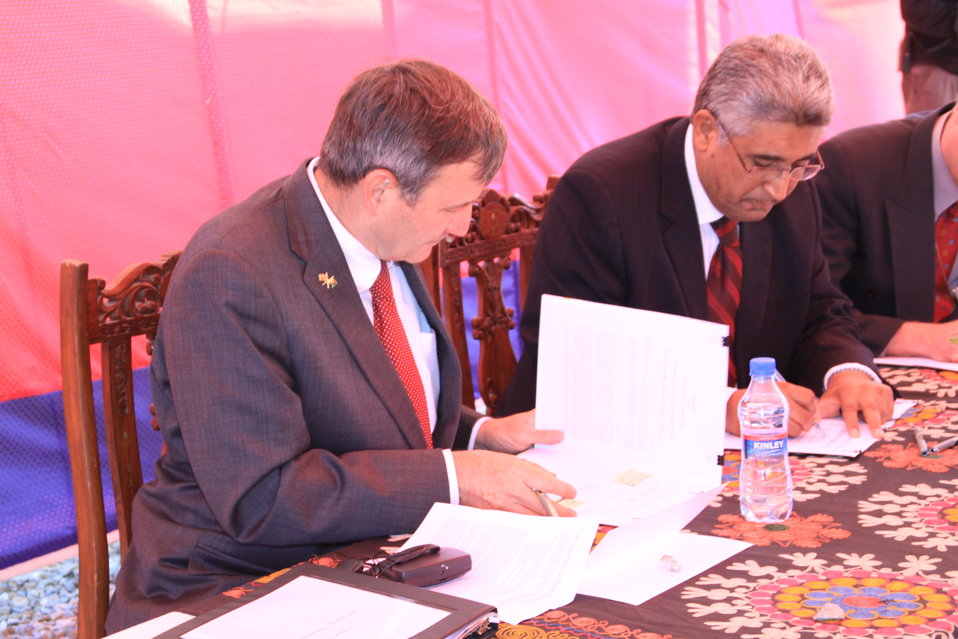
AVIPA Plus Wheat Seed Distribution 101005

US Ambassador Karl Eikenberry and USAID Acting Mission Director Kevin Brownawell joined the Minister of Agriculture, Irrigation and Livestock, H.E. Minister Mohammed Rahimi in signing a Memorandum of Understanding and distributing vouchers to area farmers for wheat and fertilizer.

US Ambassador Karl Eikenberry and USAID Acting Mission Director Kevin Brownawell joined the Minister of Agriculture, Irrigation and Livestock, H.E. Minister Mohammed Rahimi in signing a Memorandum of Understanding and distributing vouchers to area farmers for wheat and fertilizer.